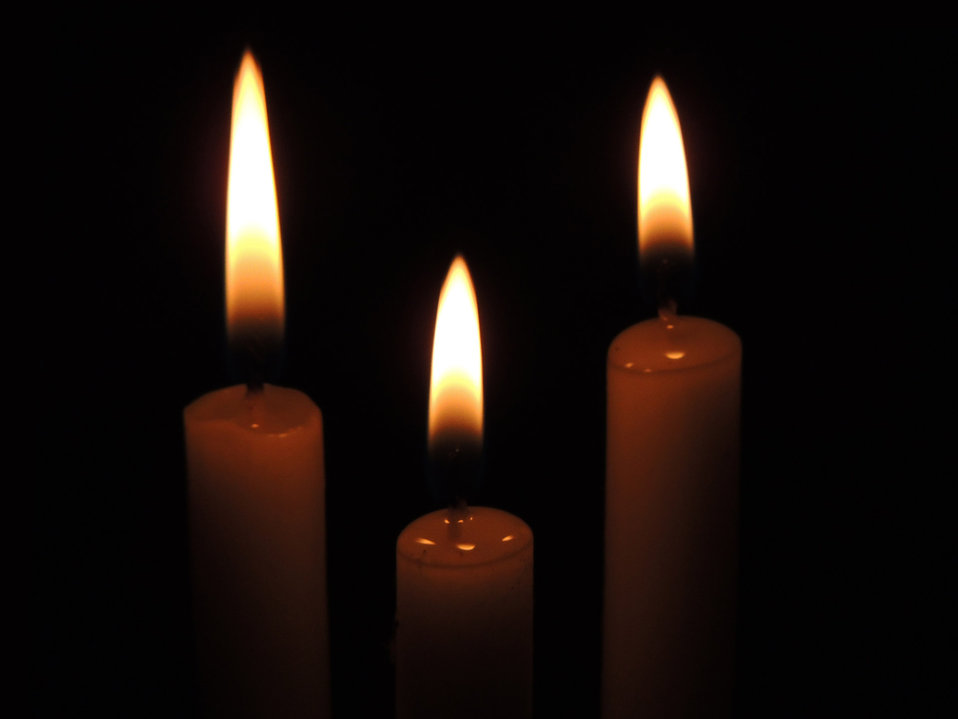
Candles

Three burning candles.